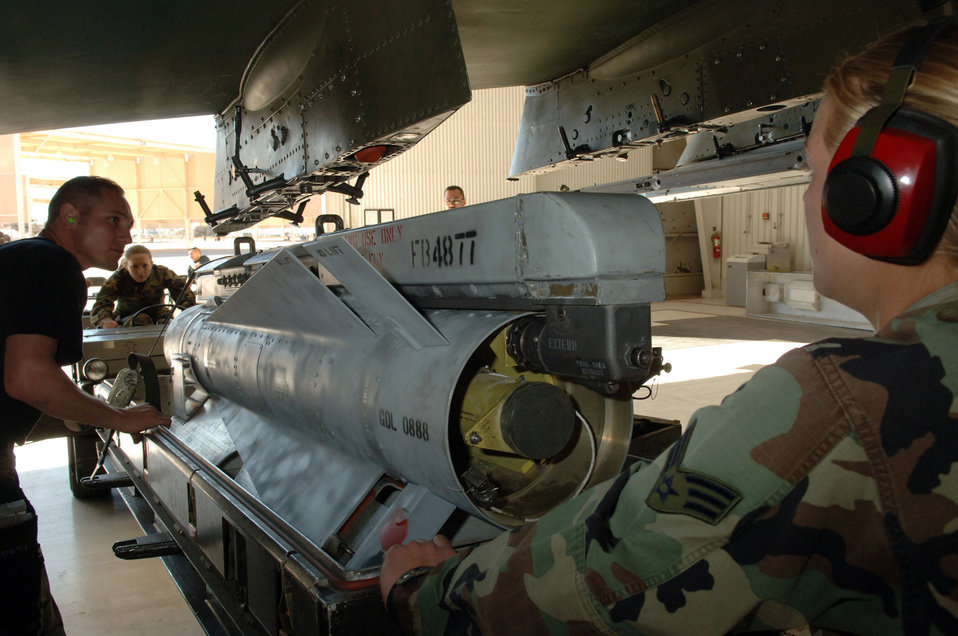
Load Crew

DAVIS-MONTHAN AIR FORCE BASE, Ariz. (AFPN) -- Crew Chief Staff Sgt. Patrick Dull, along with his team members Senior Airmen Amber Dittmer and Jennifer Martin line up the suspension lugs on a Maverick missile to ensure it will lock into place properly for transportation and than release at target site. The three Airmen are assigned to the 355th Aircraft Maintenance Squadron, which is comprised of the 354th, 357th and 358th Aircraft Maintenance Units. The 357th AMU placed first and completed the load in 38 minutes and 44 seconds.